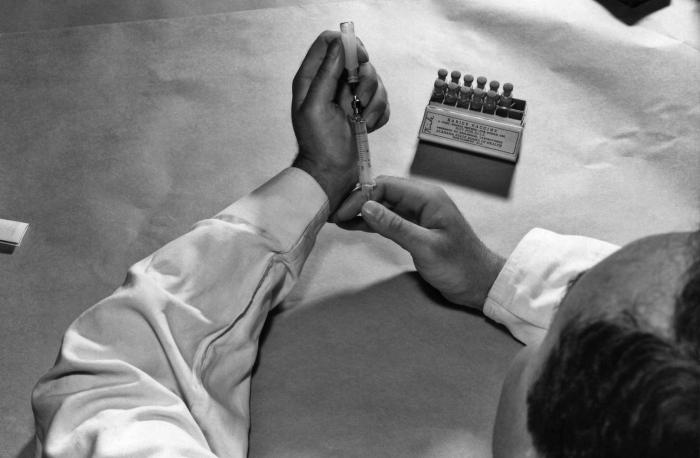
This photograph shows a CDC laboratorian as he was filling a syringe with rabies vaccine that had been obtained from the Alabama State Board of Health located in Montgomery, Alabama.